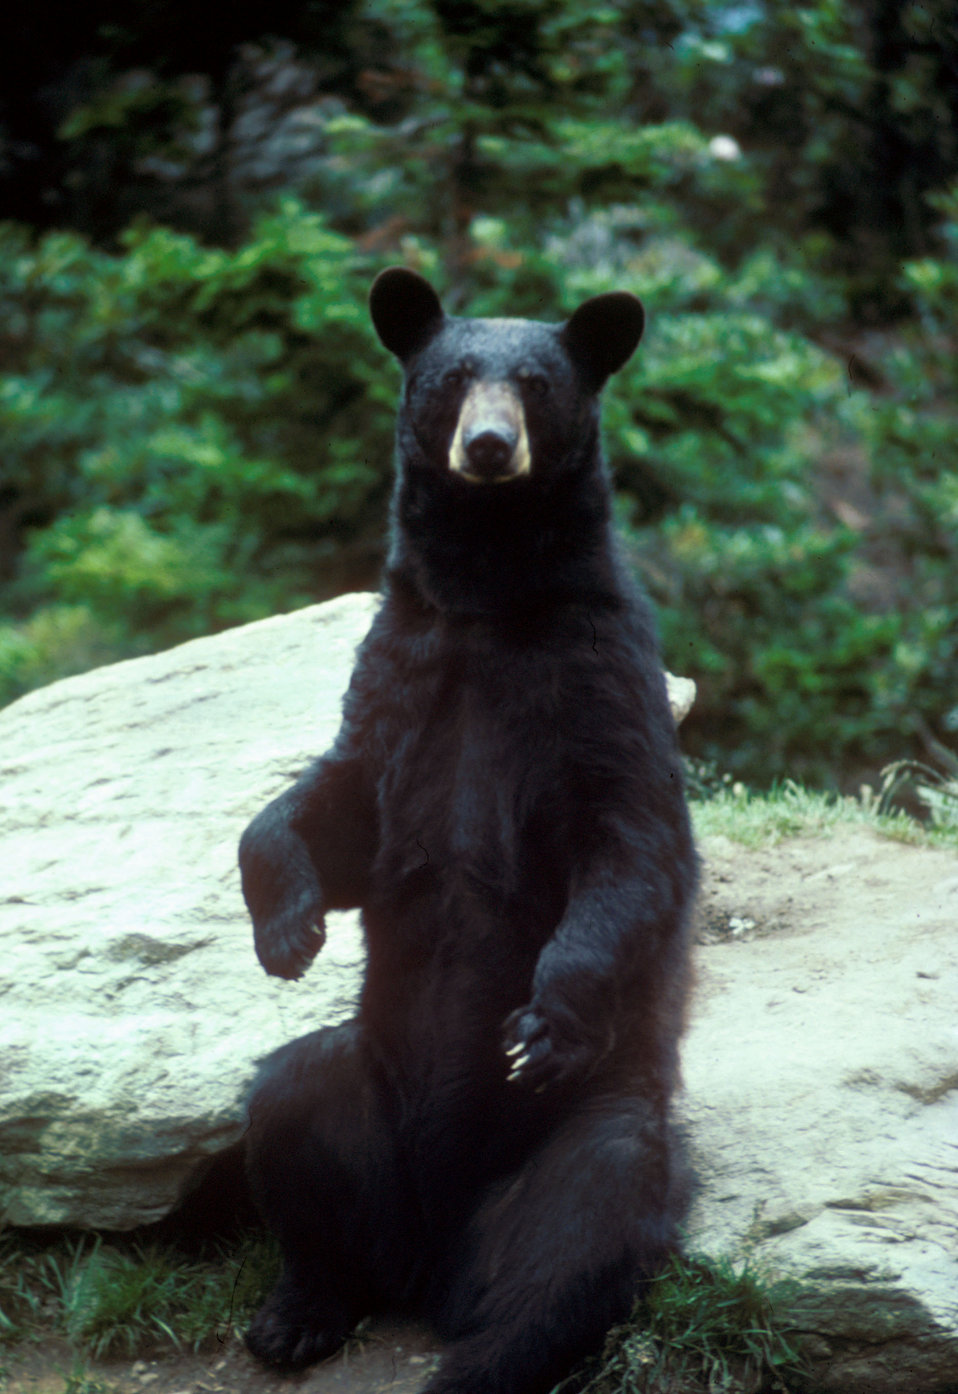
Black Bear sitting on a rock;